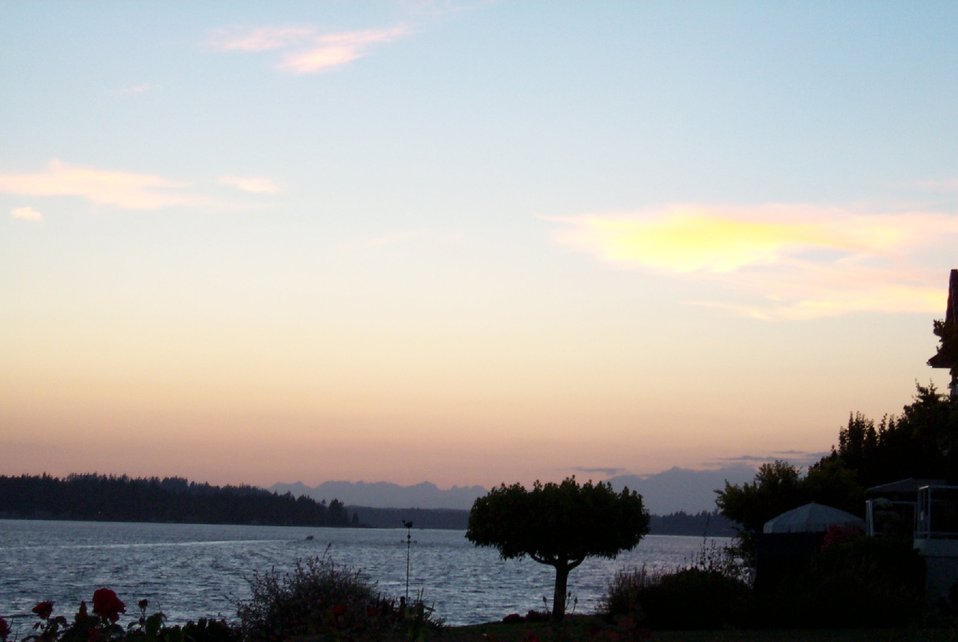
The Olympic Range is silhouetted in this sunset view from Gig Harbor.